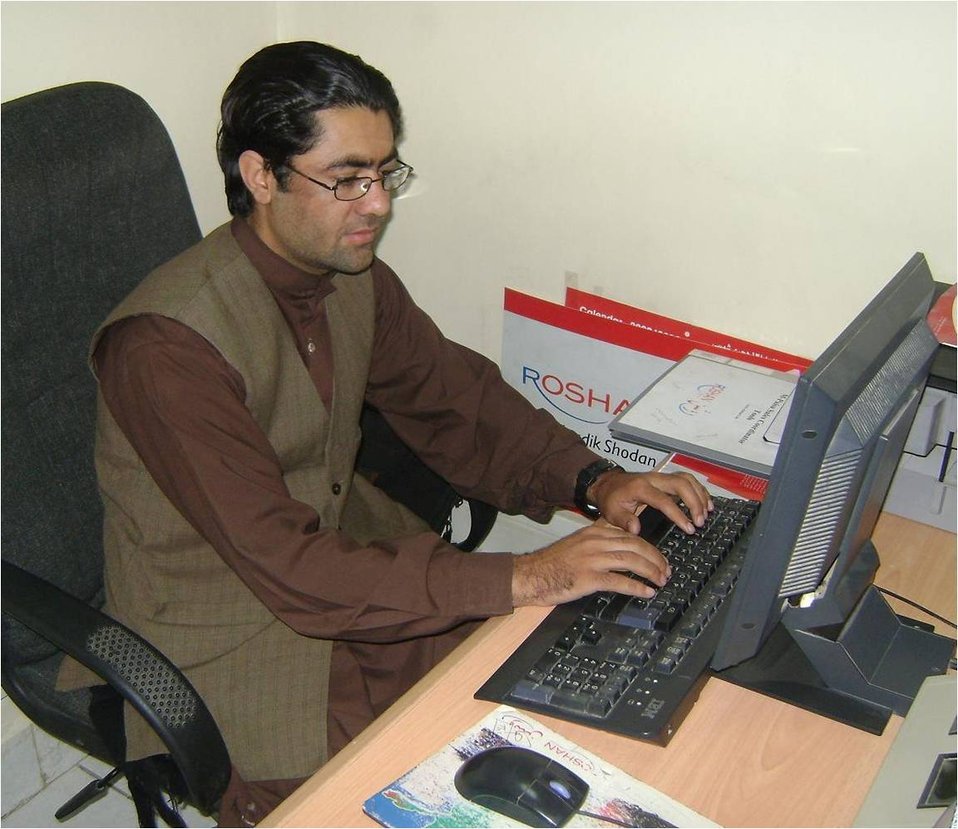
Next Generation of Afghan Business Leaders

Afghanistan’s long-term economic development relies on well-educated young people with the skills to open new businesses and manage existing firms. Building a qualified Afghan workforce, particularly at the managerial level, is crucial to the country’s economic growth. The U.S. Government is helping to develop a strong Afghan workforce through internships and professional training for the next generation of business leaders.
Through the Afghanistan Small and Medium Enterprise Development (ASMED) project, USAID offers Afghanistan university students hands-on internships in a variety of business-related fields. Participants complete three months of theoretical training in management, marketing, and accounting, followed by three months of practical training through placements with Afghan companies and non-governmental organizations.
The program launched in 2007 with 63 students from Kabul University, and has since expanded to nine universities across Afghanistan. In 2008, USAID expanded the program to the underserved student populations in the south of Afghanistan. Two classes of interns have since graduated from Kandahar University. The program recently expanded again to provide internships to 150 high school students in Hilmand, Uruzgan, and Zabul provinces because there are no universities in these provinces.
Thus far, more than 858 young professionals, including 172 women, have completed the program and approximately 75 percent of the graduates received offers of full-time employment from their host companies.
“I am happy with every aspect of the internship program,” said Noor Mohammad, an intern with the International Organization for Migration. “I really had no time or resources to study marketing, business management, or accounting. But through this program, not only have we studied these subjects, we are completing practical work using our knowledge.”
The internship program is successfully training the next generation of business leaders. As the program continues to expand, it will help to build an Afghan workforce that can take the lead in the country’s long-term economic development.